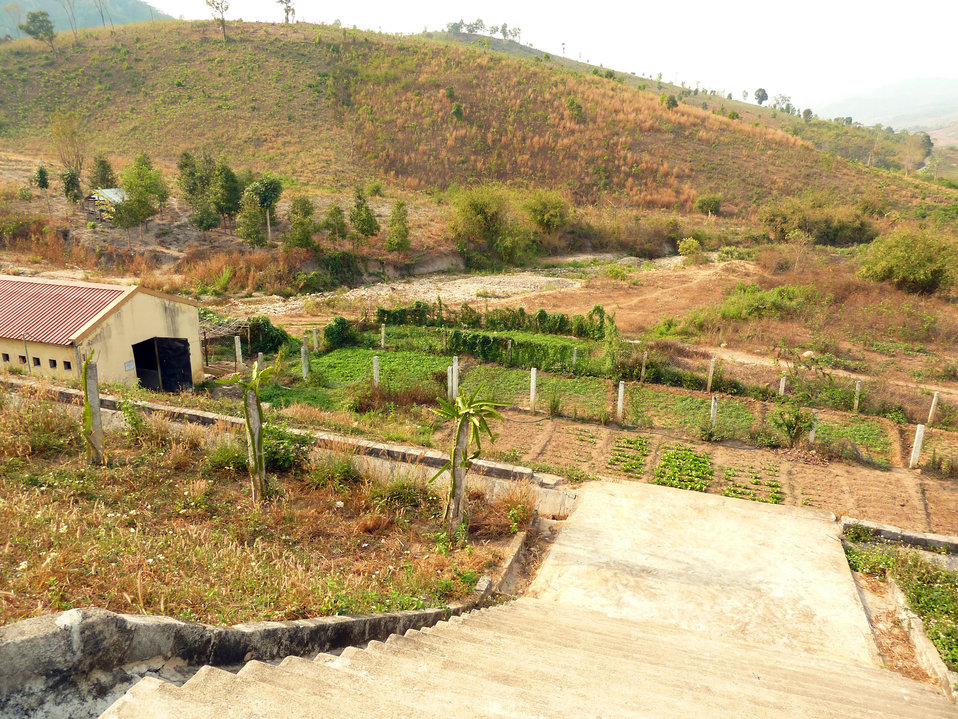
Gardens at Kon Ray School